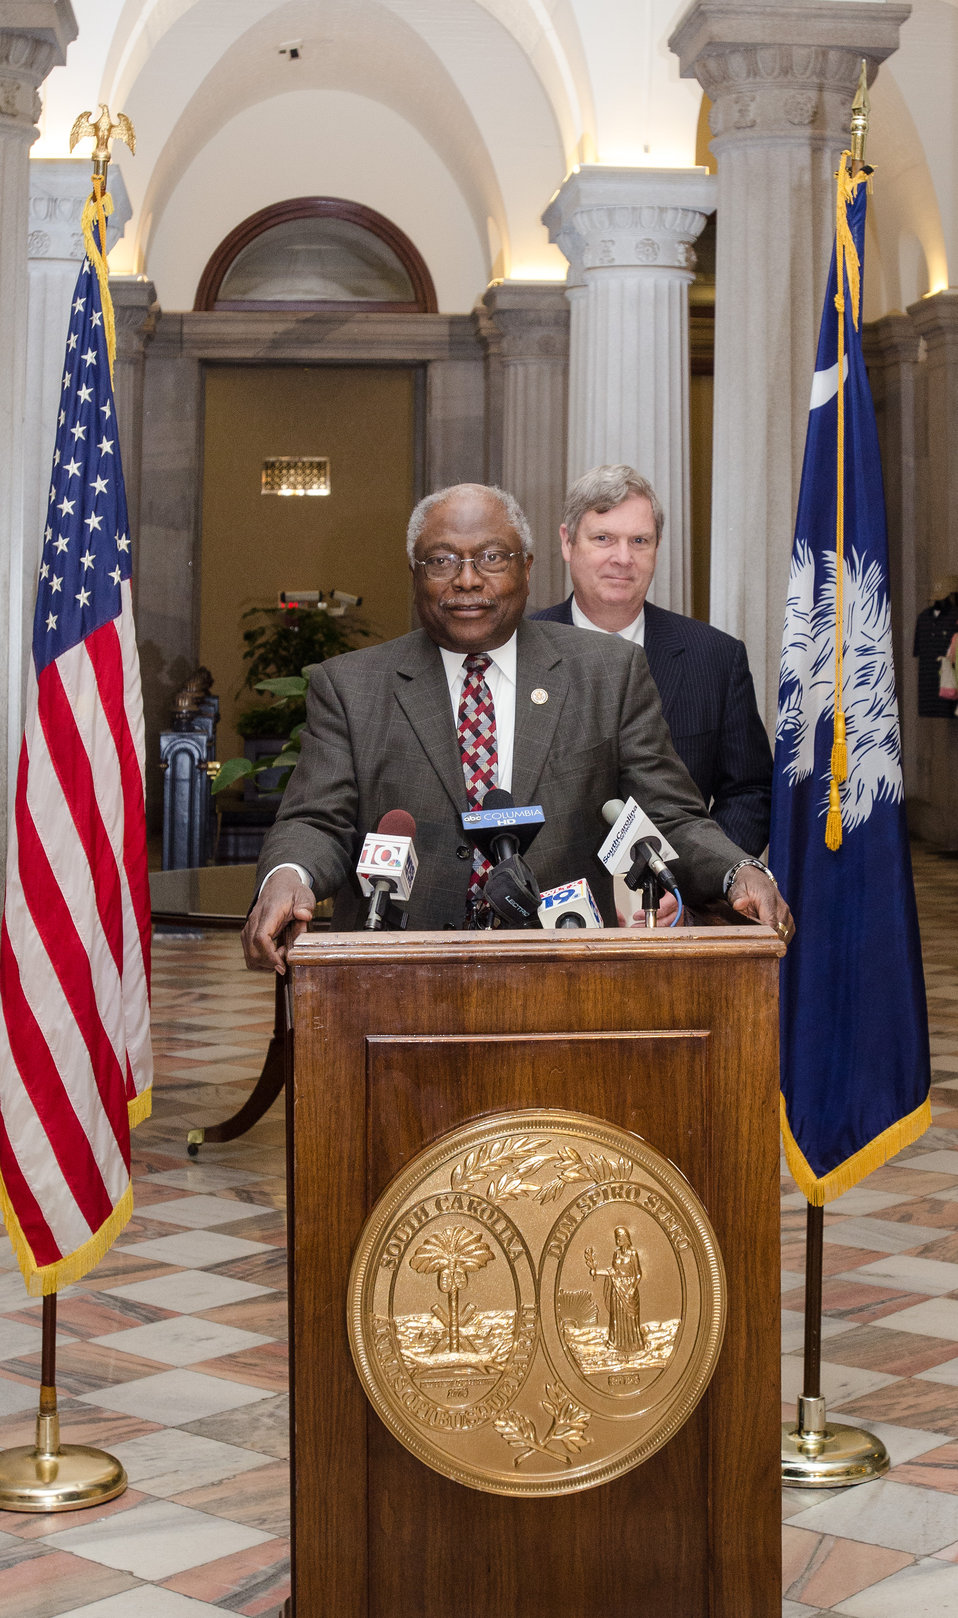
Agriculture Secretary Tom Vilsack and South Carolina Congressman James E. Clyburn (podium) hold a press conference in the South Caroline State Capitol in Columbia, SC after the kick off of the Strike Force Initiative For Rural Growth and Opportunity at Voorhees College in Denmark, SC, on Tuesday, Mar. 26, 2013.